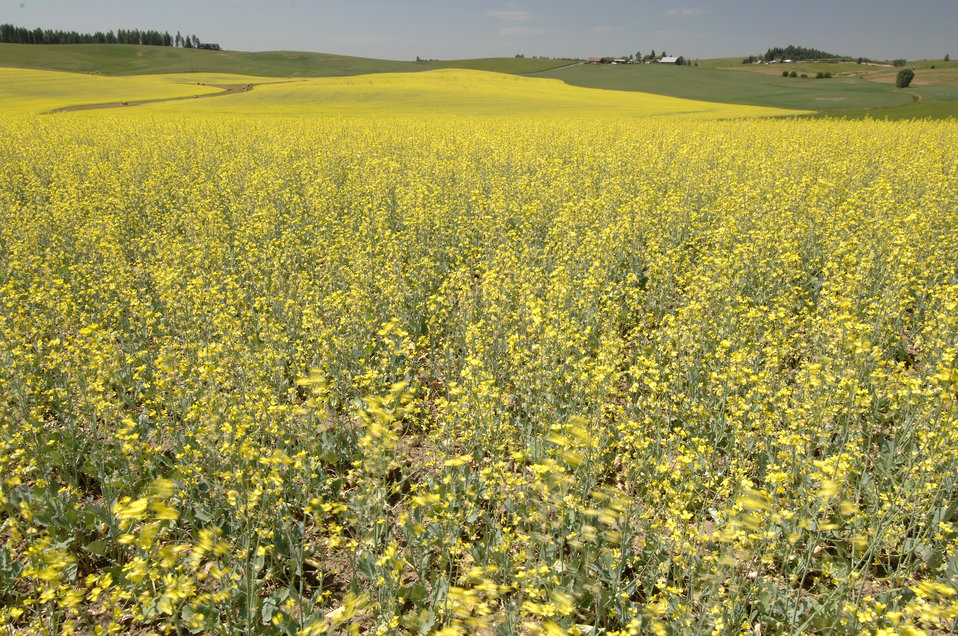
A farm located near Moscow, Idaho on July 8, 2008.